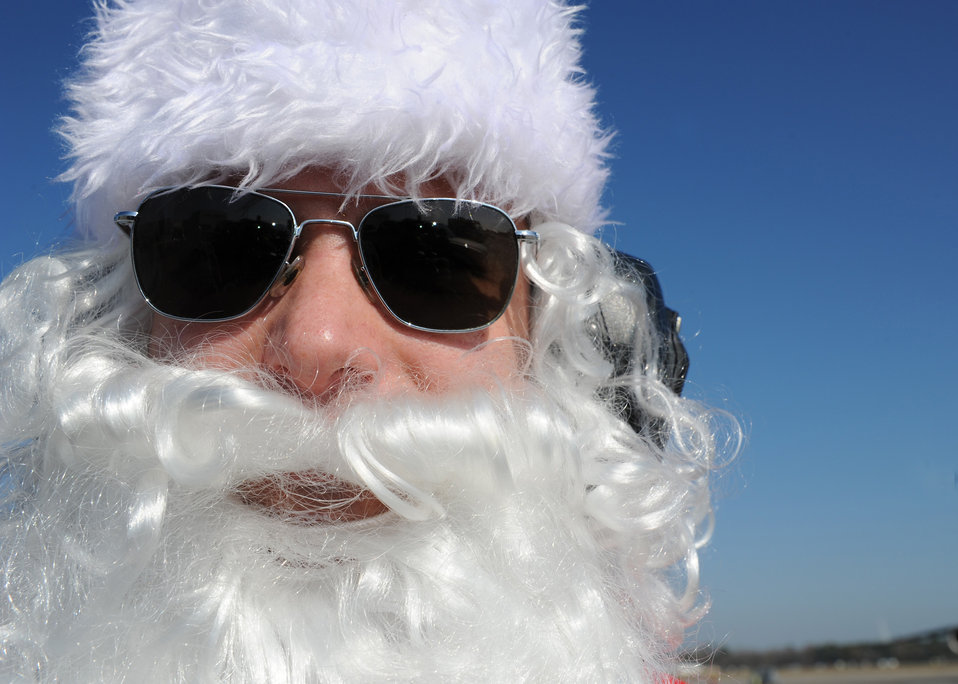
Santa Claus, friends welcome C-17

Santa Claus known as Maj. Aaron Sasson waits on the Charleston Air Force Base, S.C., flightline Dec. 22, 2009, to marshal a C-17 Globemaster III. The 437th Aircraft Maintenance Squadron voted for Major Sasson, their operations officer, to become Santa for a squadron fundraiser.